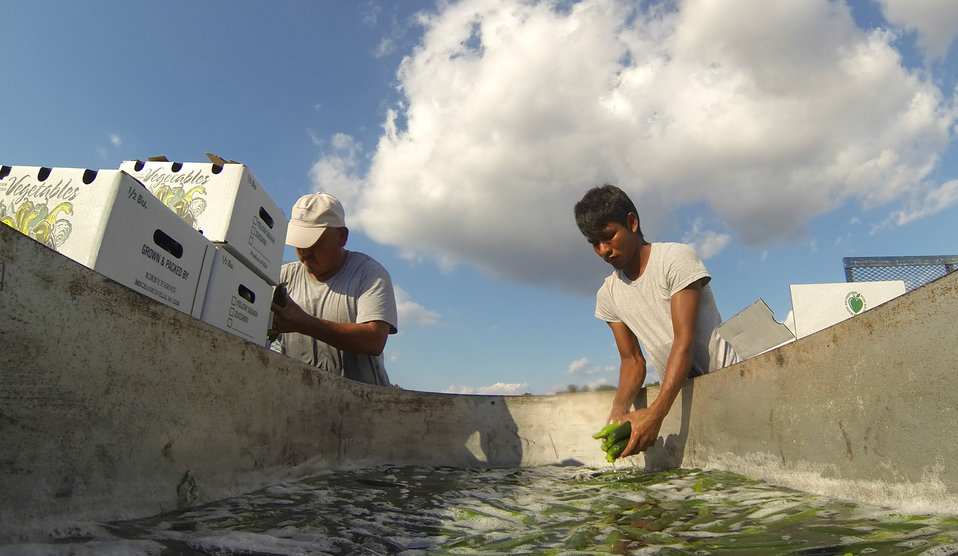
Migrant workers rinse and pack just-picked yellow squash on a processing trailer, at Kirby Farms in Mechanicsville, VA on Friday, Sept. 20, 2013. Kirby Farms devotes 200 acres of the farm to eggplant, spinach, beets, tomato, jalapeno peppers, melons and a variety of greens. Soybeans and small grain are grown on the remaining 300 acres. The fertile Virginia soil and their management practices, allows Kirby Farms to double and triple crop fields with rotational crop selection. Wholesalers, who buy from this farm, sell the produce to major supermarkets in the Mid-Atlantic region, from North Carolina to Maryland. Restaurants in the local area prepare and serve their harvest to patrons in the Greater Richmond, VA Region.